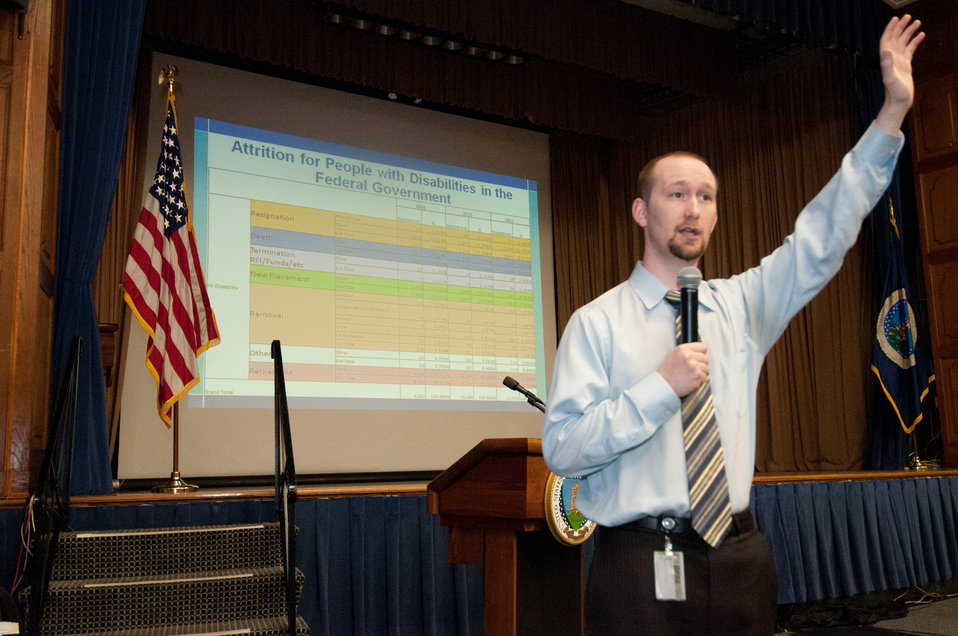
Office of Personnel Management (OPM) Diversity and Inclusion Program Manager Michael Murray discusses diversity and inclusion at the U.S. Department of Agriculture (USDA) Office of Human Resources Management (OHRM) Disability Employment Program Team Training at USDA in Washington, D.C. on Tuesday, May 14, 2013.